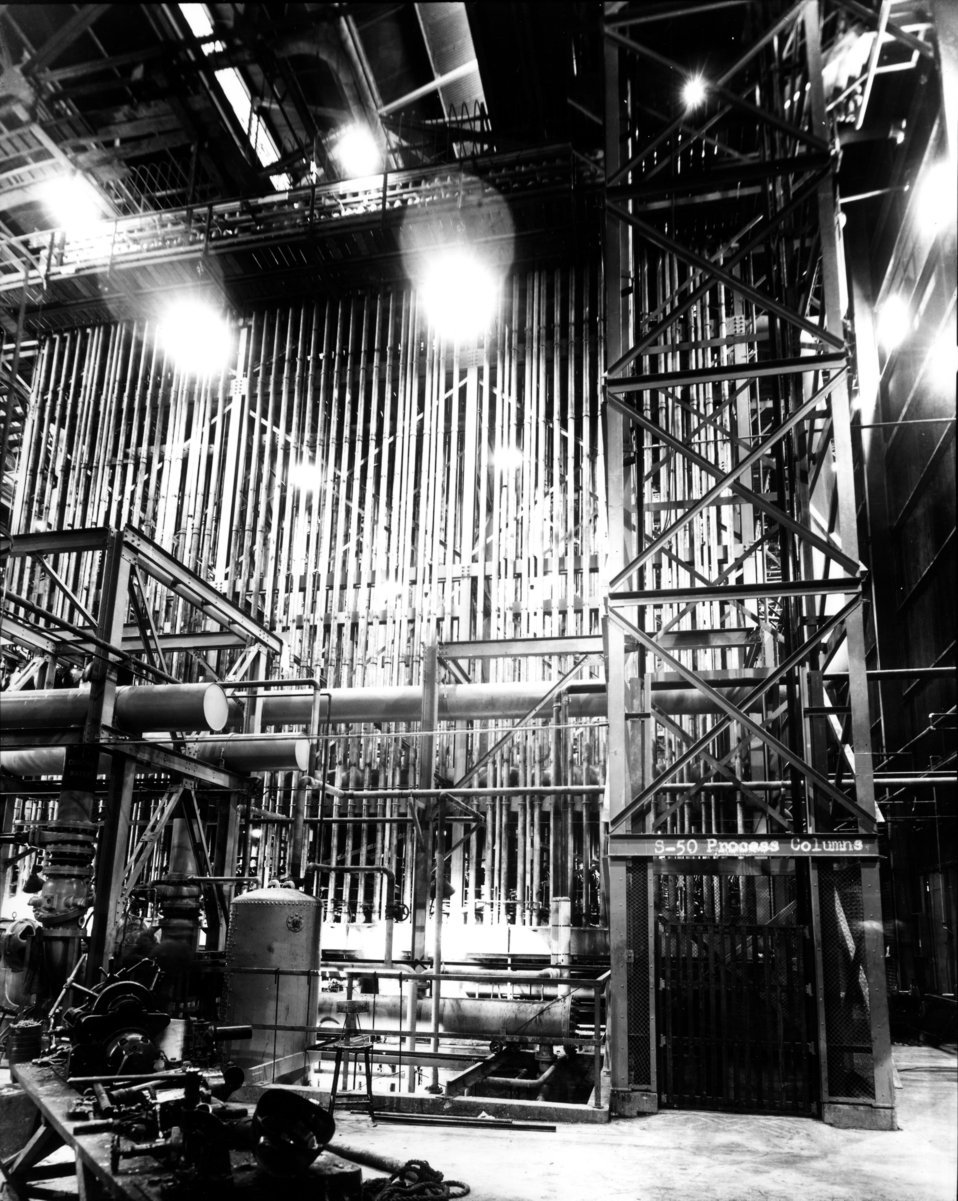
Schools at Oak Ridge